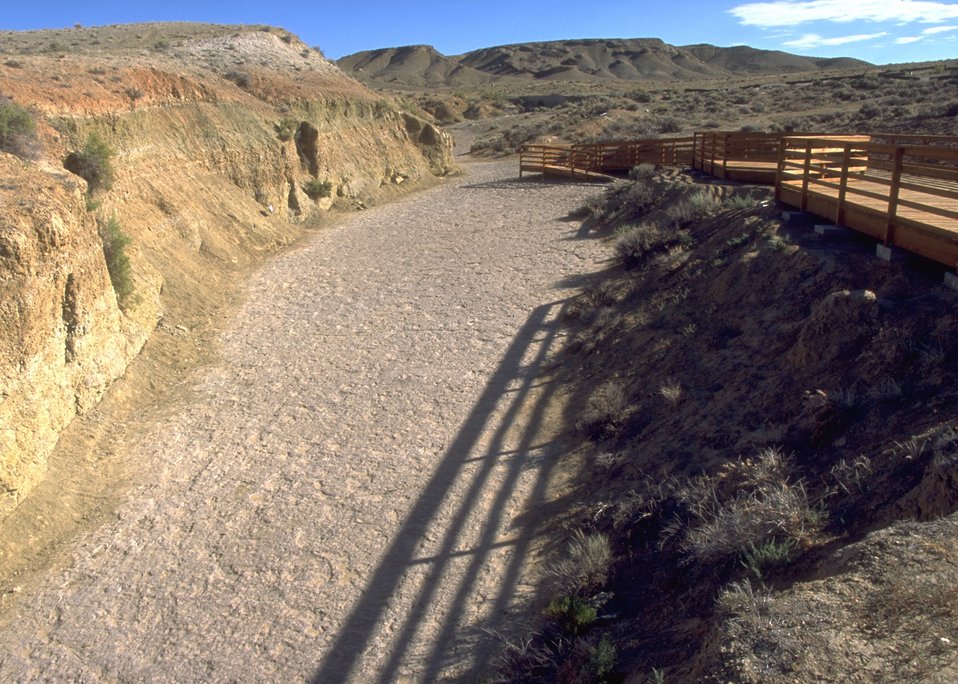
Red Gulch Dinosaur Tracksite showing some of the developed facilities and the tracksite, along Red Gulch/Alkali Back Country Byway, Worland Field Office.